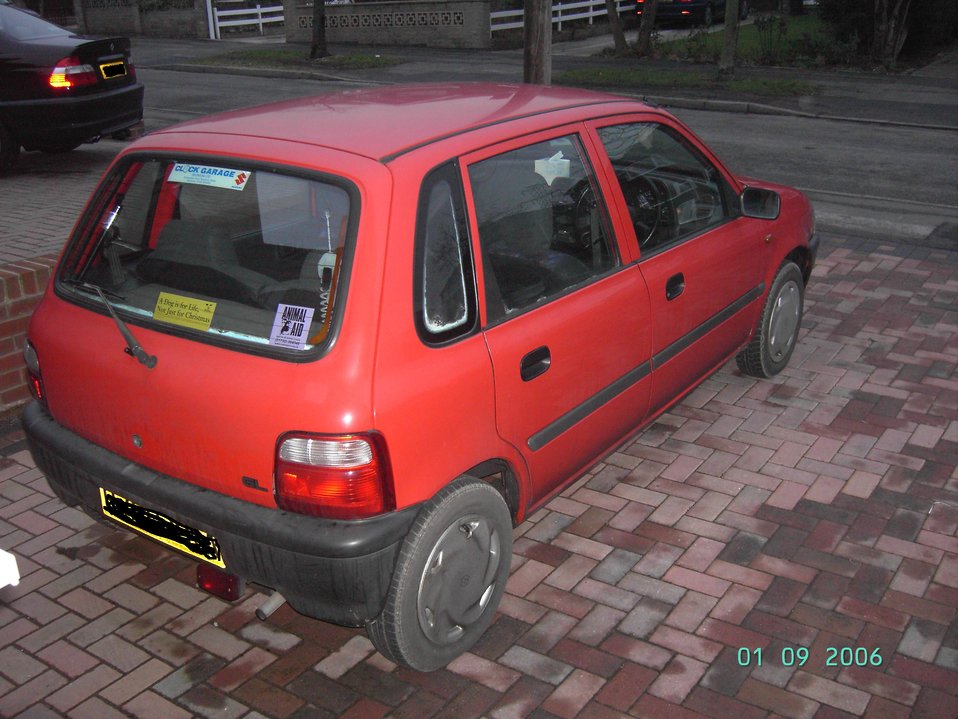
Suzuki Alto